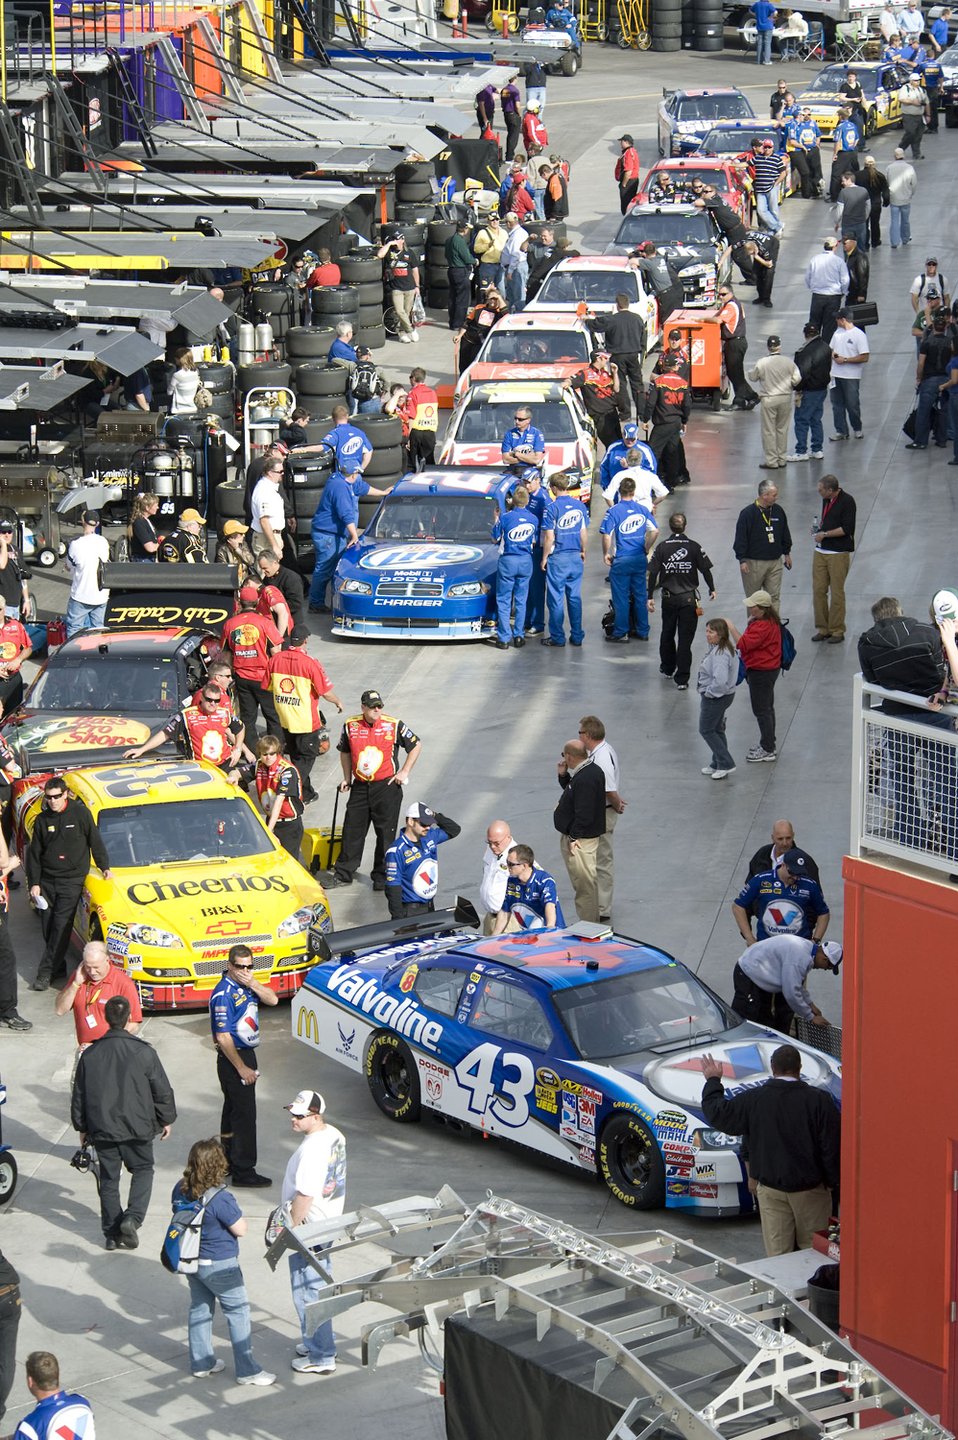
Air Force teams with NASCAR to aid recruiting

The Air Force sponsored No. 43 Dodge driven by Reed Sorenson is lined up for inspection Feb. 28 at Las Vegas Motor Speedway in Nevada.